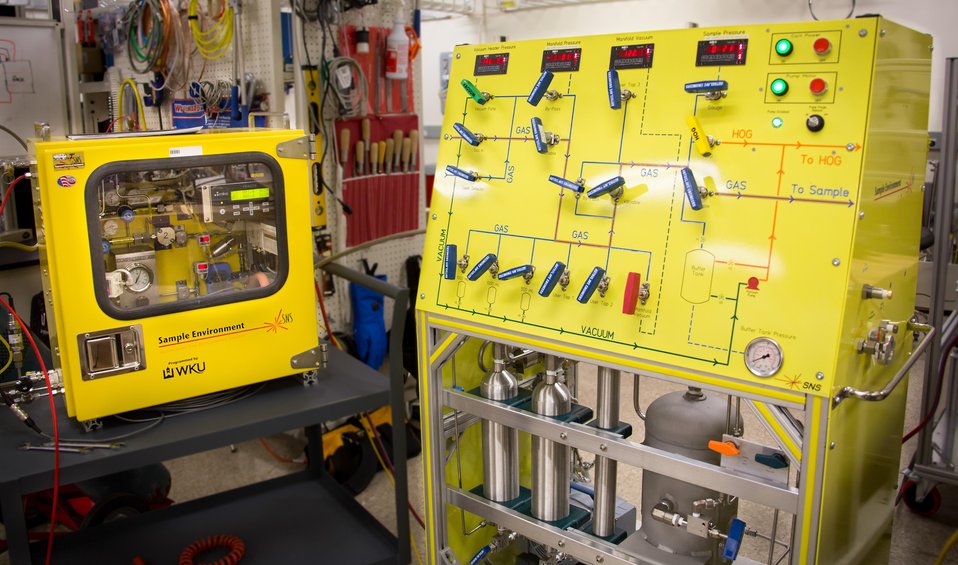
SHOWN IS AN UPGRADED SAMPLE ENVIRONMENT GAS PRESSURE PANEL CART AT THE SPALLATION NEUTRON SOURCE AT OAK RIDGE NATIONAL LABORATORY.

The systems are designed to significantly simplify and improve the experimental user interface. The panels precisely and accurately control the pressure and volume of inert, hazardous, and user supplied sample gases. They are well suited for use in pressure cells, gas loading and gas sample interaction experiments. The panels are rated for operation for pressures from vacuum to 4000 psi.